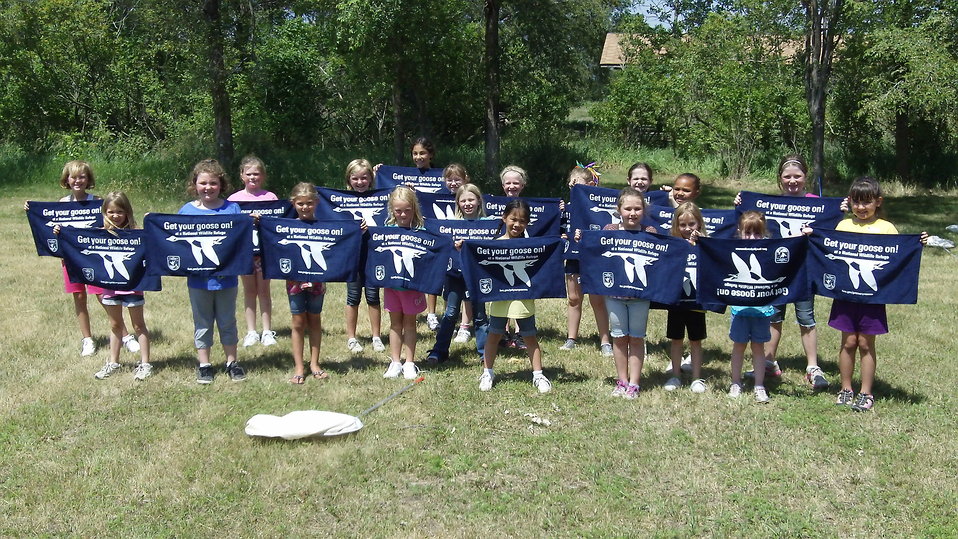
Huron Girl Scout Troop; Get Your Goose On!

Huron Girlscout Troop showing off some 'Get your Goose On!' towels.